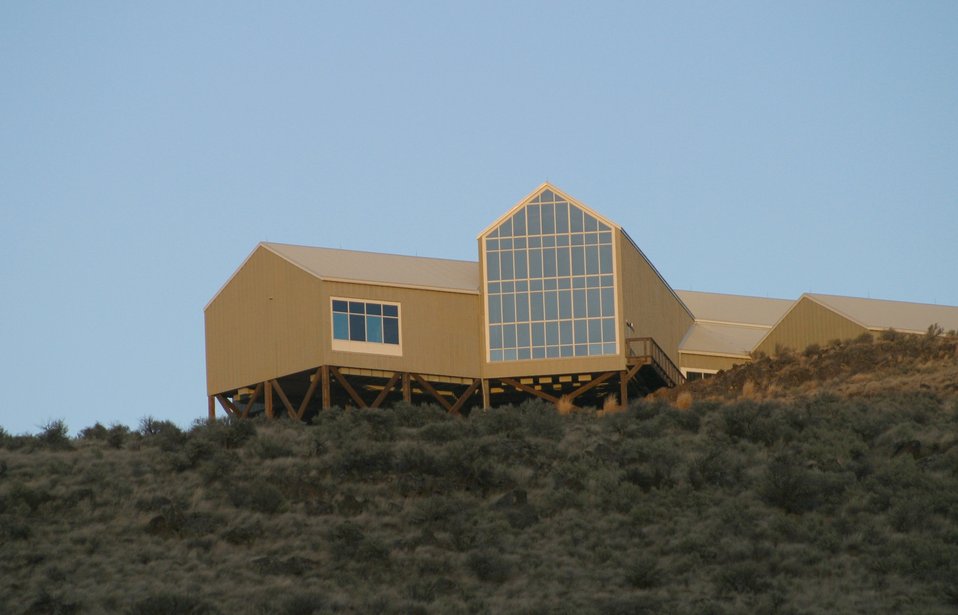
Early evening view of the NHOTIC from the Oregon Trail just below the Center.